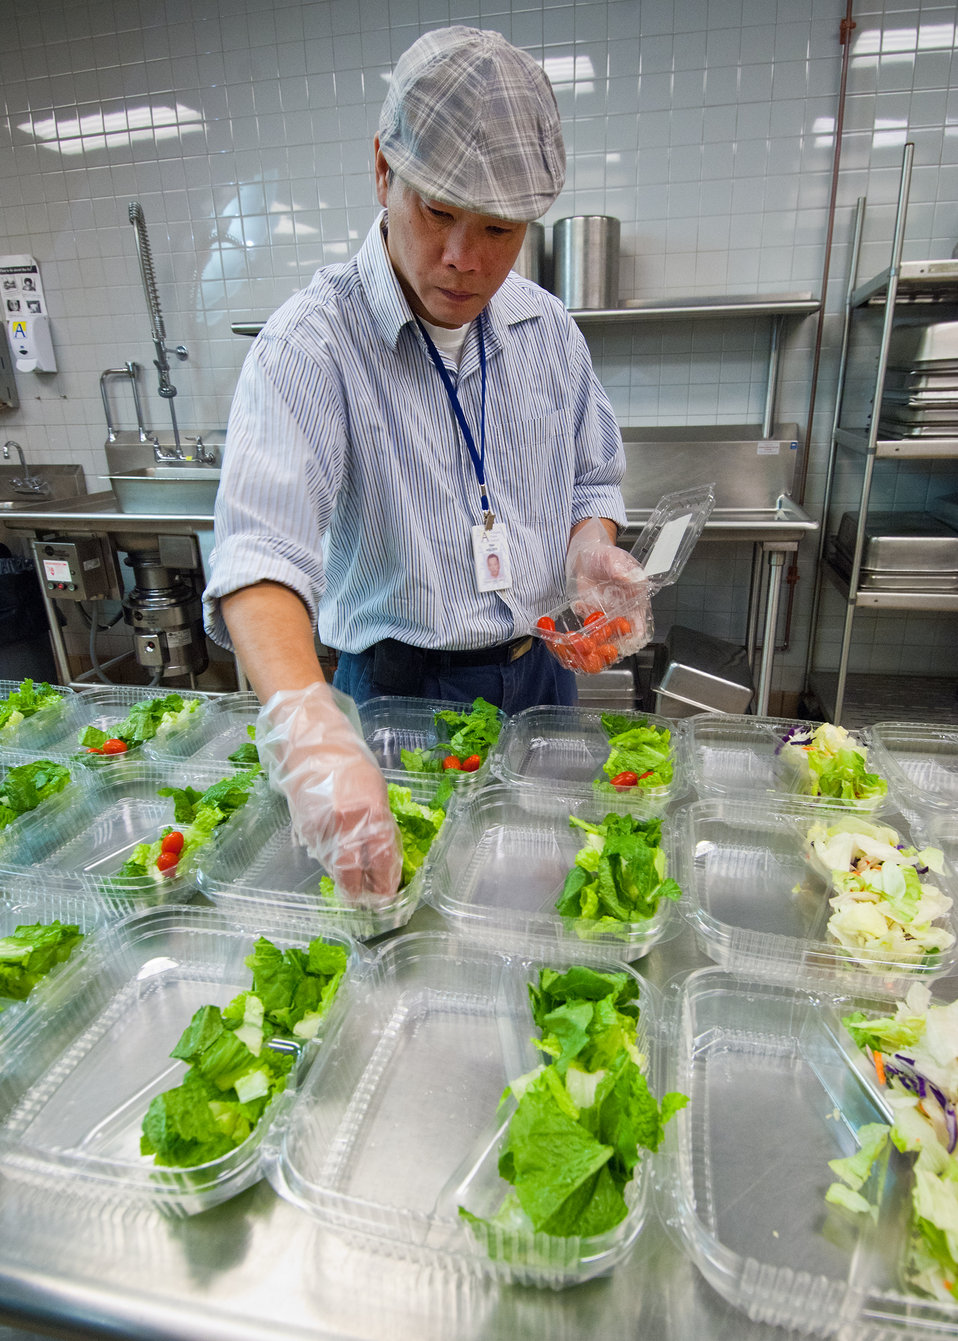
Thai Nguyen, a Food Service Specialist with Arlington Public Schools Food and Nutrition Service prepares salads he for the National School Lunch Program in the kitchen at Washington-Lee High School in Arlington, Virginia, on Wednesday, October 19, 2011. The National School Lunch Program is a federally assisted meal program administered by the United States Department of Agriculture, Food and Nutrition Service operating in public, nonprofit private schools and residential child care institutions. It provides nutritionally balanced, low-cost or free lunches to children each school day.